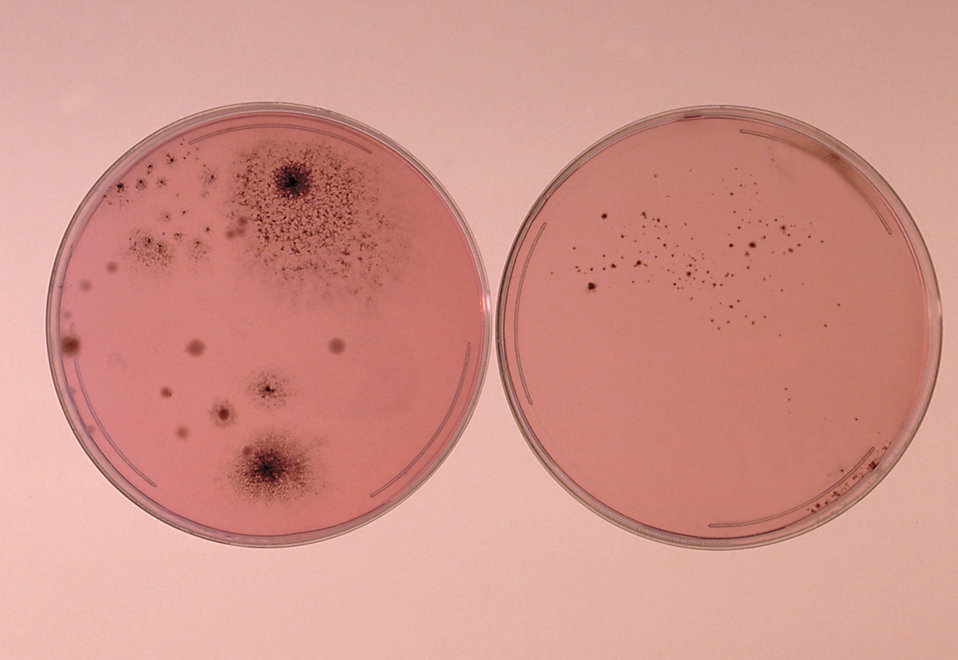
Here Smith's diagnostic medium plate culture of H. capsulatum shows growth despite the presence of contaminating molds.